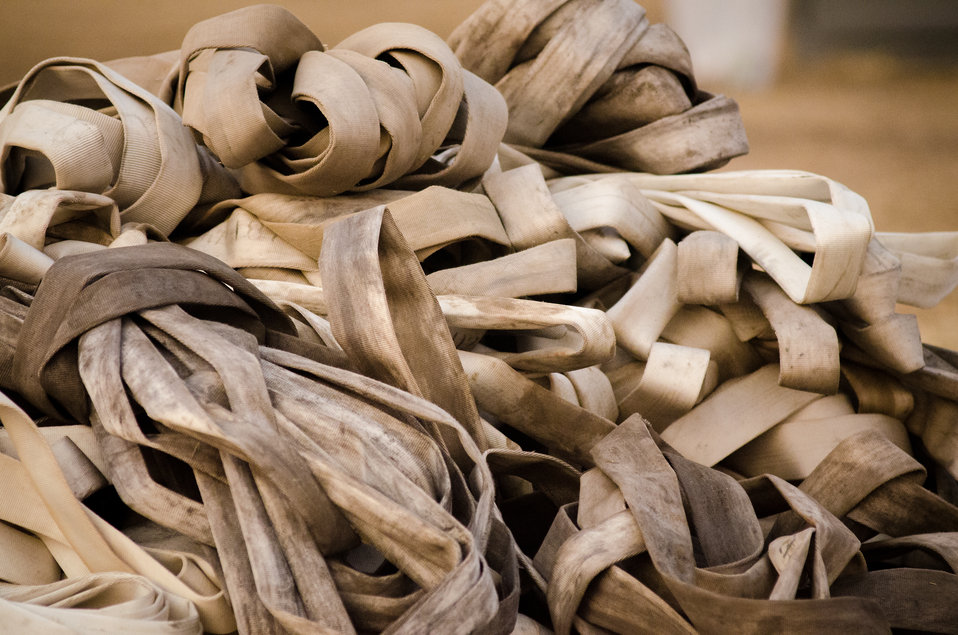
Used fire hoses are left at a hose winding station, near the supply cache, where they will be inspected for serviceability and if good, a machine will be used to efficiently roll the collapsible hoses into a neat roll, during the Beaver Creek Fire, west of Hailey, ID, in the U.S. Department of Agriculture (USDA) Forest Service (FS) and Sawtooth National Forest and Bureau of Land Management (BLM), on Wednesday, Aug 21, 2013. Structure protection at the scale of this fire often threatens homes, infrastructure, sacred and historic locations, requiring the use of miles of hose to preposition hand lines (water hoses) in the event of fire fighting and for sprinklers to keep remote homes, structures surrounding areas wet.